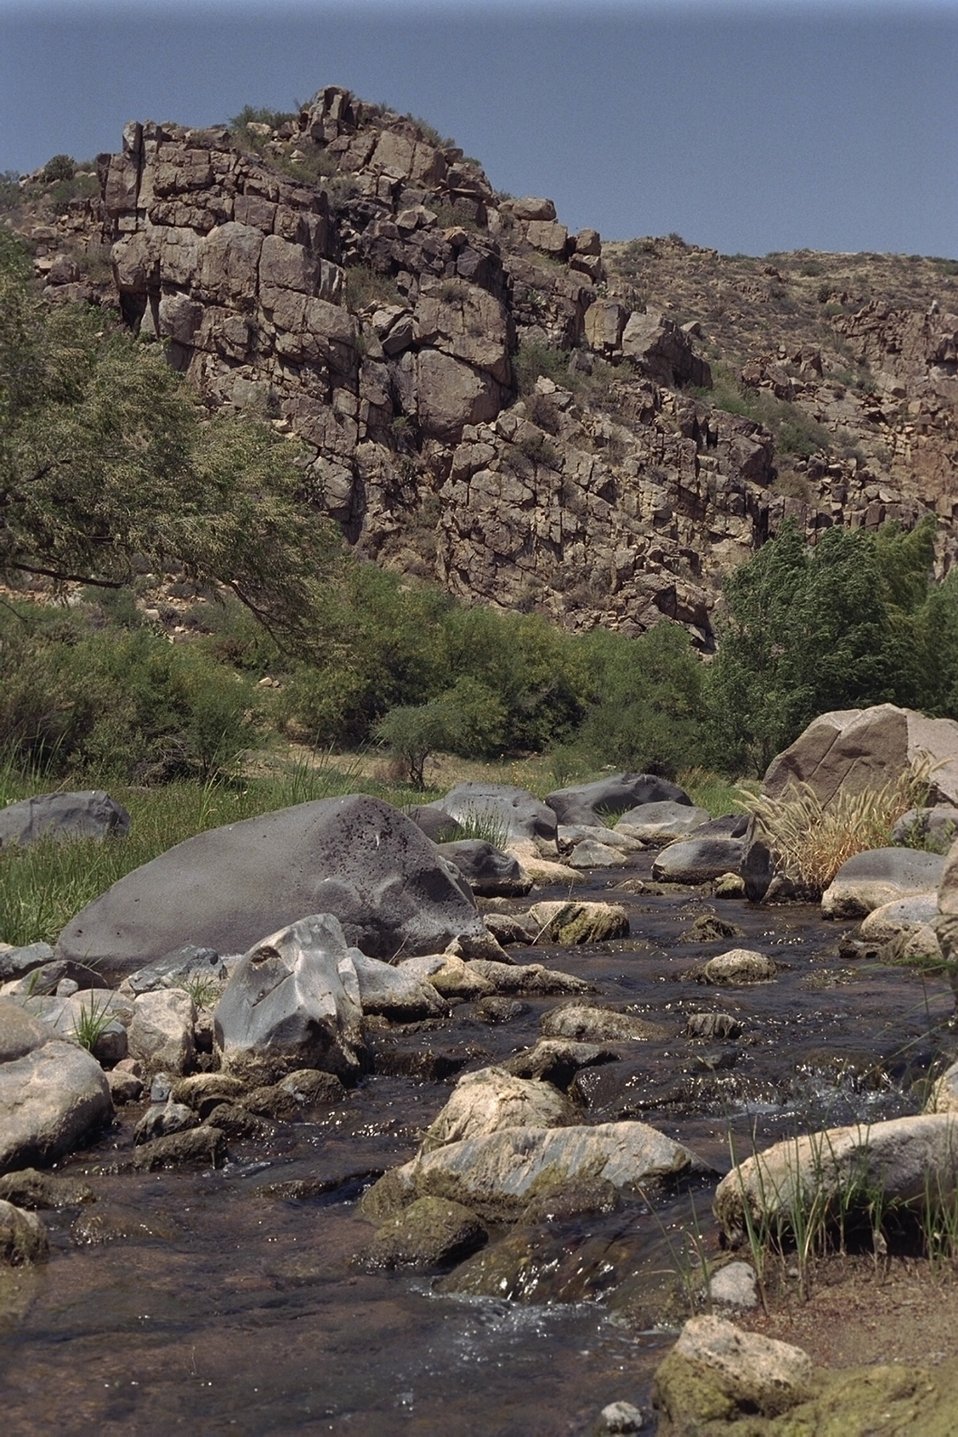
The Agua Fria River runs through the canyon that shares its name.